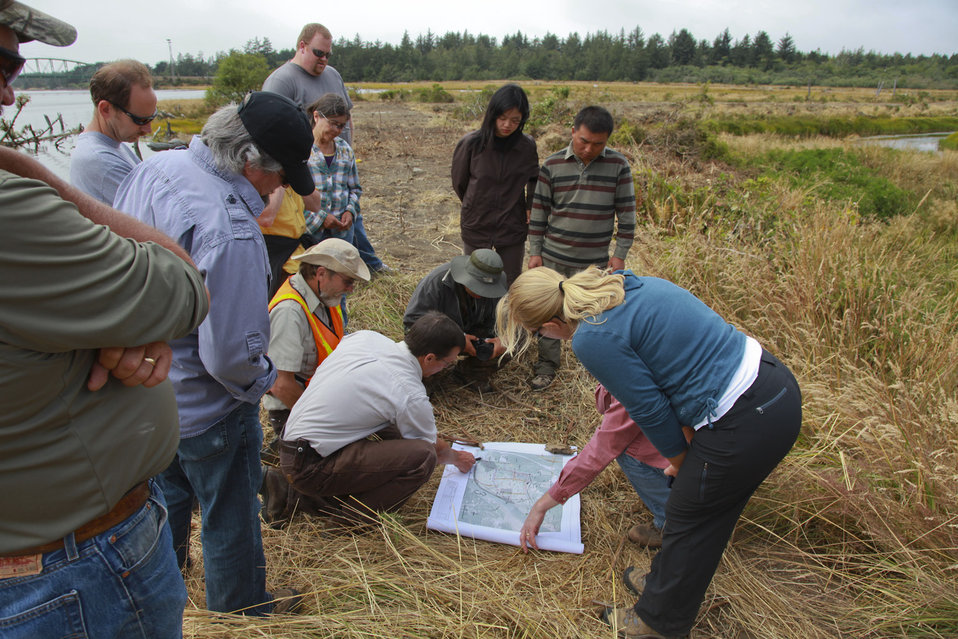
NOAA Fisheries Tour